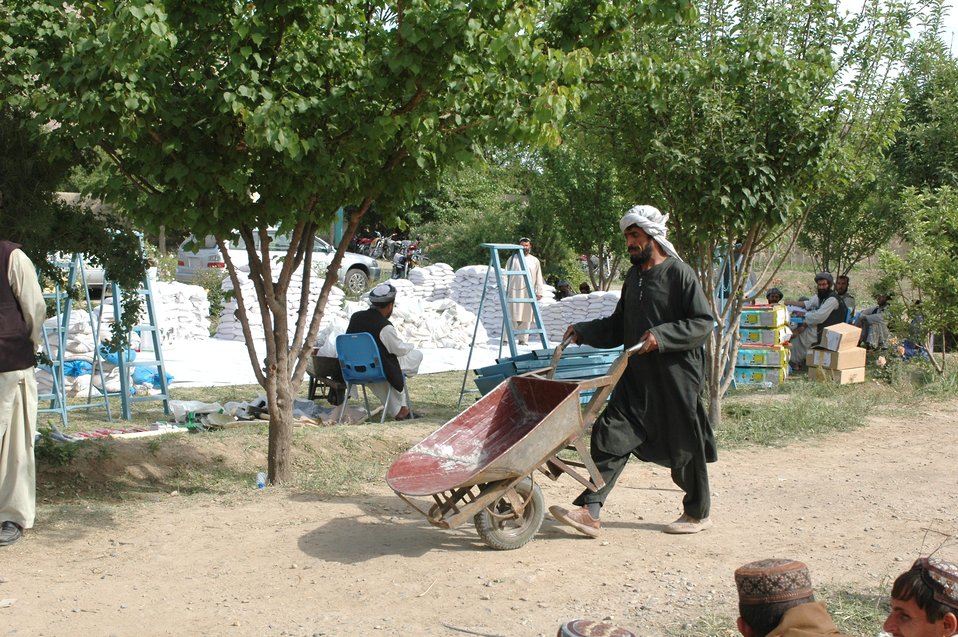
Dr Shah Visits Argandab April 10, 2010